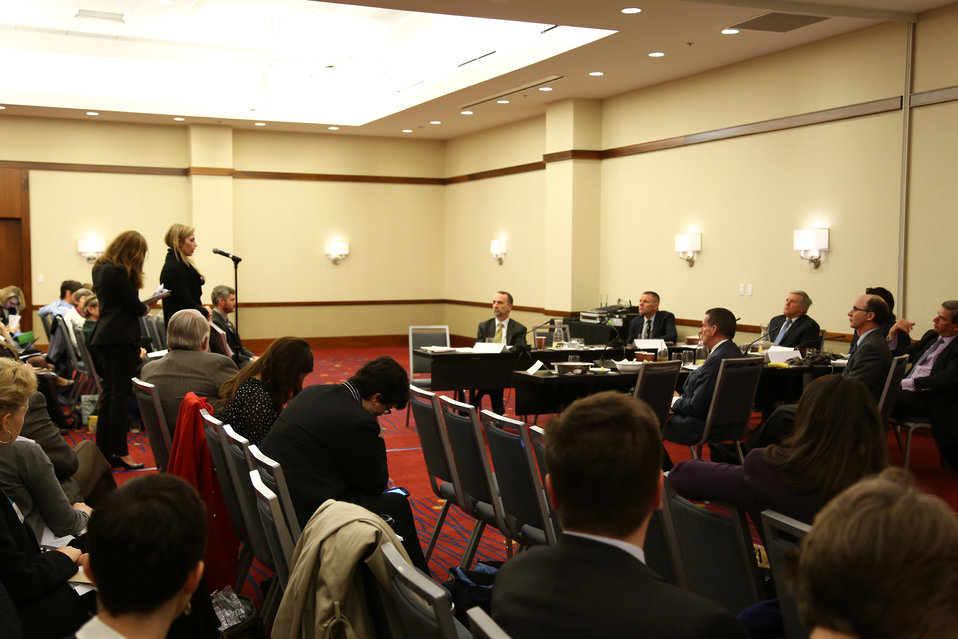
Wildlife Trafficking Advisory Council Meeting March 20, 2014